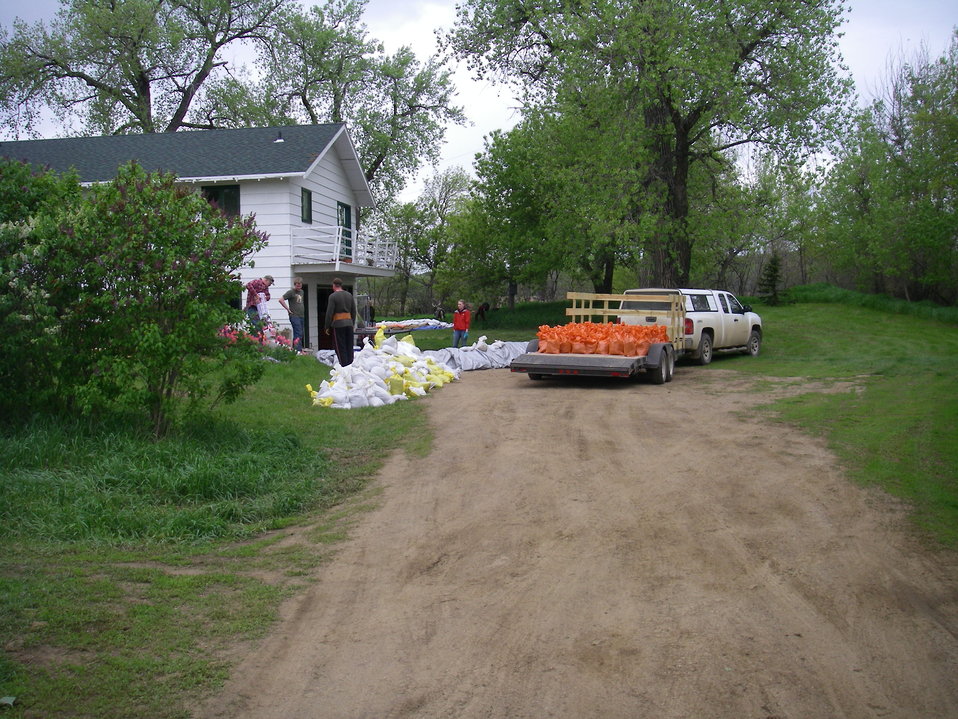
Flood Preparations

As the Missouri river continues to rise, the U.S. Fish and Wildlife Service and other partners volunteer to fill sand bags and take other preemptive measures to protect lives and property below Garrison Dam in the Bismarck/Mandan area in North Dakota. With planned releases from the dam expected to nearly double the river’s flow in the next two weeks, more flooding is expected.